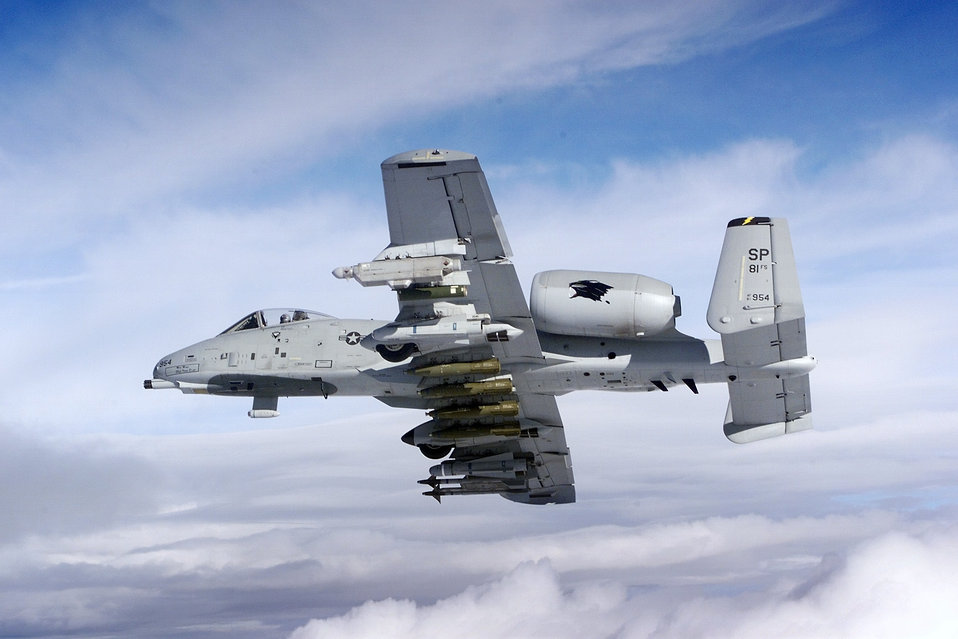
A-10 in flight

1990's -- An A-10 from the 81st Fighter Squadron, Spangdahlem Air Base, Germany flies over central Germany on Feb. 17, 2000. Spangdahlem AB consists of the 81st Fighter Squadron, which flies the A-10 Thunderbolt II, and two F-16 Fighting Falcon squadrons, the 22nd and 23rd Fighter Squadrons.